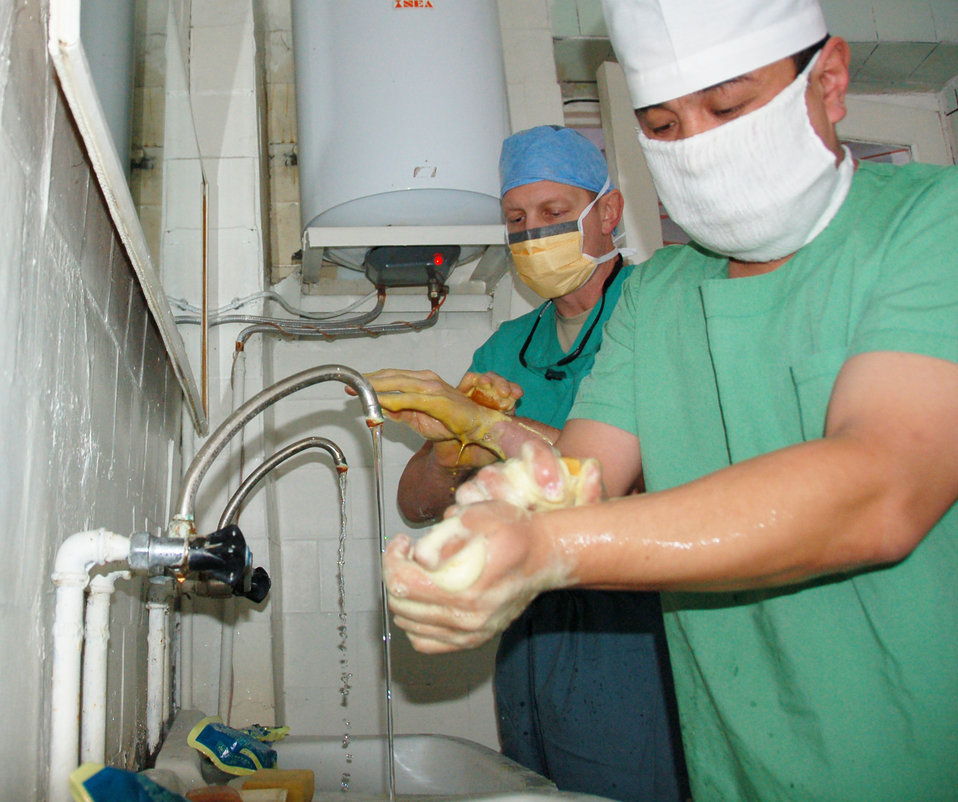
Airmen perform operations with Kyrgyz surgeons

Lt. Col. (Dr.) Joseph Browne cleans up for a surgery alongside a Kyrgyz surgeon before a joint medical operation Dec. 11, 2009, in a military hospital in Kyrgyzstan. During their operation, Doctor Browne and the Kyrgyz doctor operated on a patient with broken collar bones. During the visit, the team of Airmen from the Transit Center at Manas, Kyrgyzstan, assisted their Kyrgyz counterparts with two surgical procedures. The team of Airmen was led by Col. (Dr.) Jerrold Flyer, 376th Expeditionary Medical Group commander.